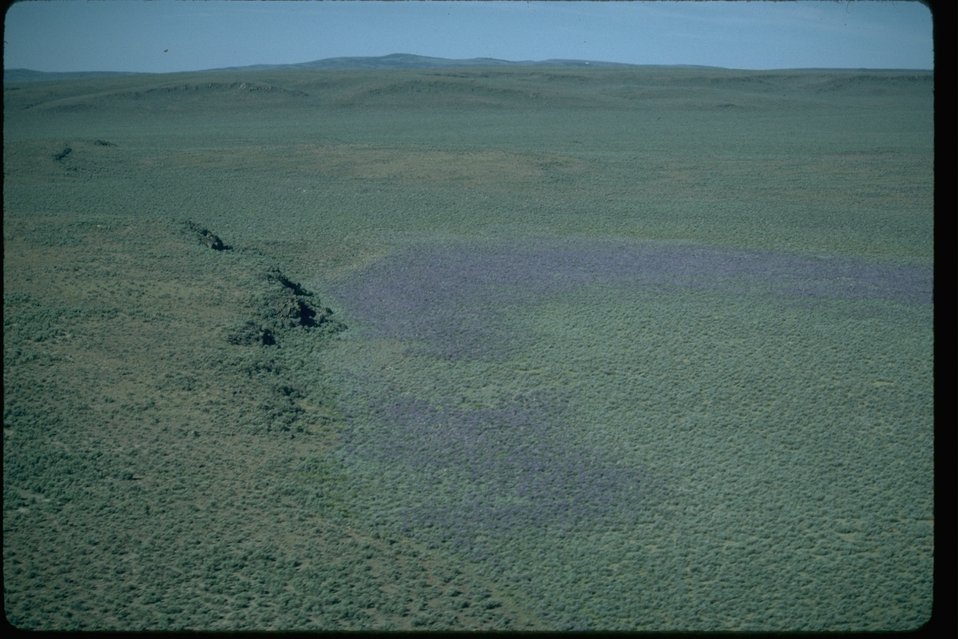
Long shot of Lupine near Stallion and the "Hawksie-Walksie.